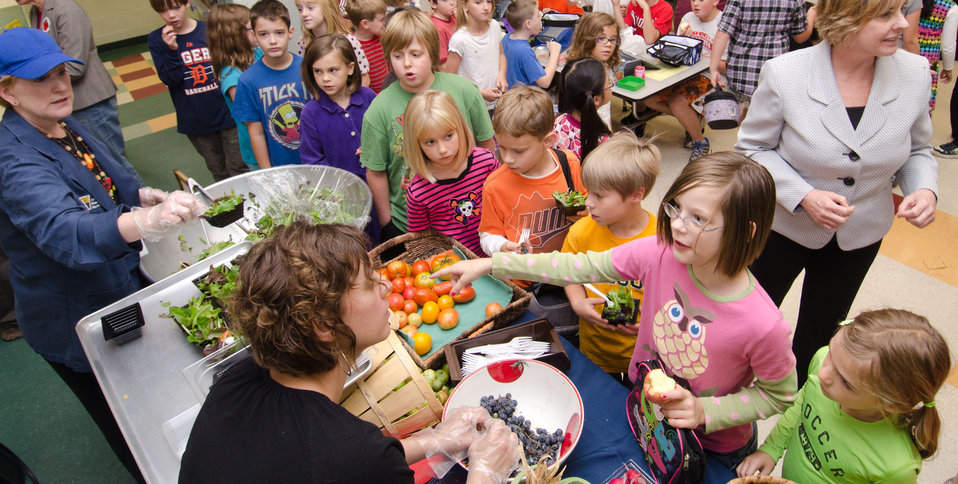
Registered Dietician Sandra B. O'Connor prepared and served sample mixed greens salads for the school lunch program, while Maple Avenue Market Farm co-owner Sara Guerre (bottom l) invited students to learn about local and interesting varieties of produce such as purple corn on the cob that is used for popping, during a National School Lunch Week event at Nottingham Elementary School in Arlington, VA, on Wednesday, October 12, 2011. Farmers from Bigg Riggs Farm in Hampshire County, WV, and Maple Avenue Market Farm in Vienna, VA were very popular with the students. Today's menu included roasted chicken, roasted butternut squash with dried cranberries, farm fresh mixed lettuce salad, turkey wraps, pita wedges, hot muffins, carrots, Asian pears and more.